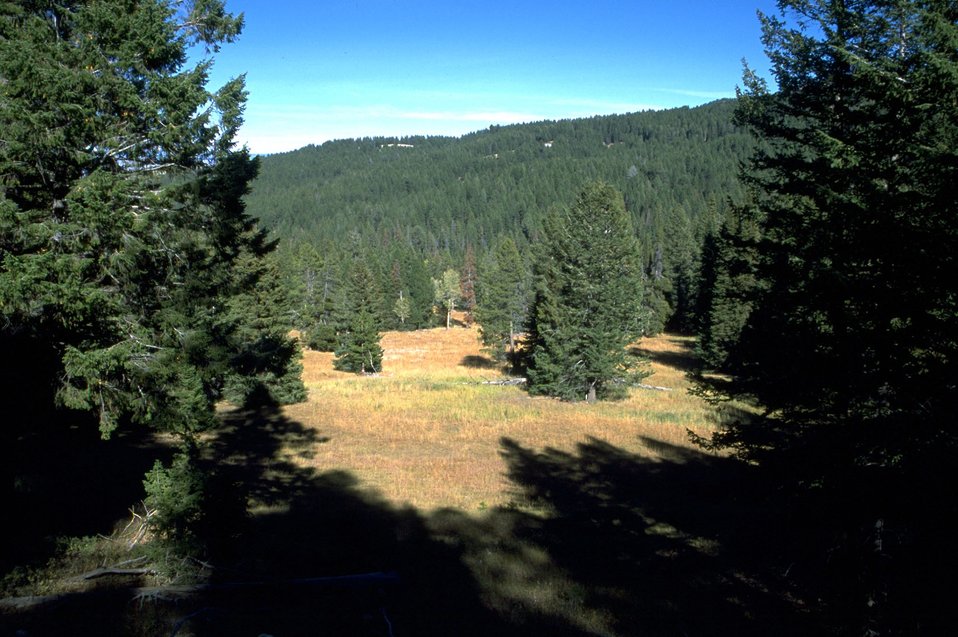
Scenic view near Arasta Creek